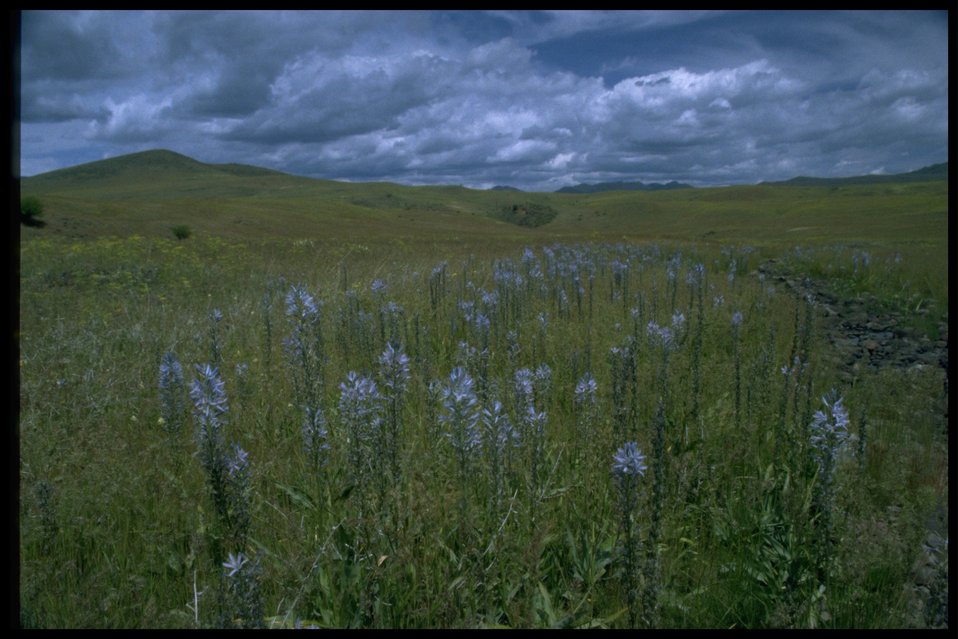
Farshot of Cusick's Camas wildflowers in drainage habitat.